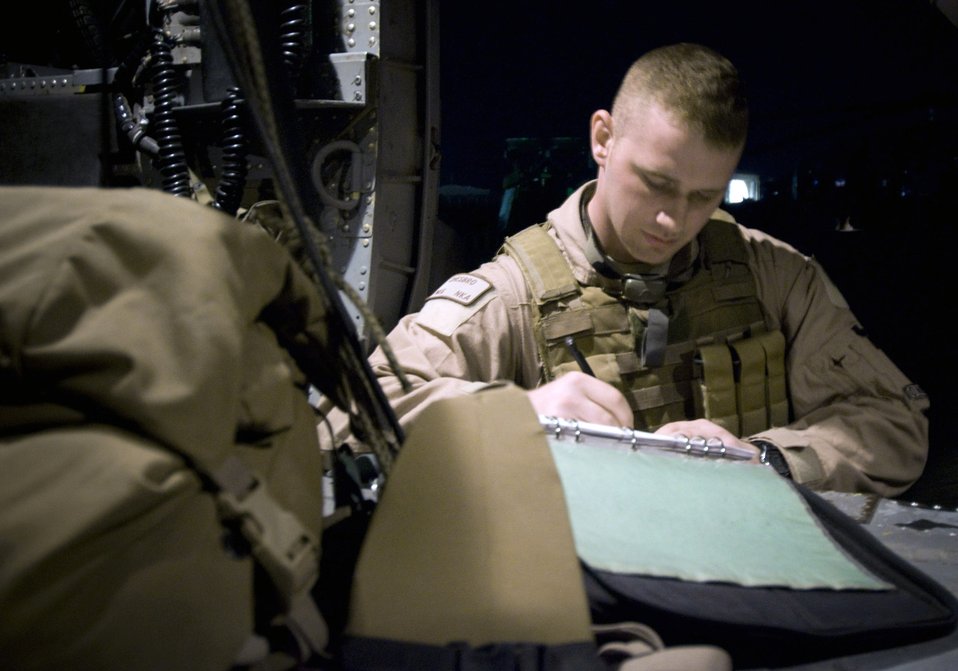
Nighttime operations

Airman 1st Class Devin Chesbro prepares and checks forms for a flight July 17 at Bagram Air Base, Afghanistan. Airman Chesbro is a 33rd Expeditionary Rescue Squadron flight engineer deployed from Kadena Air Base, Japan.